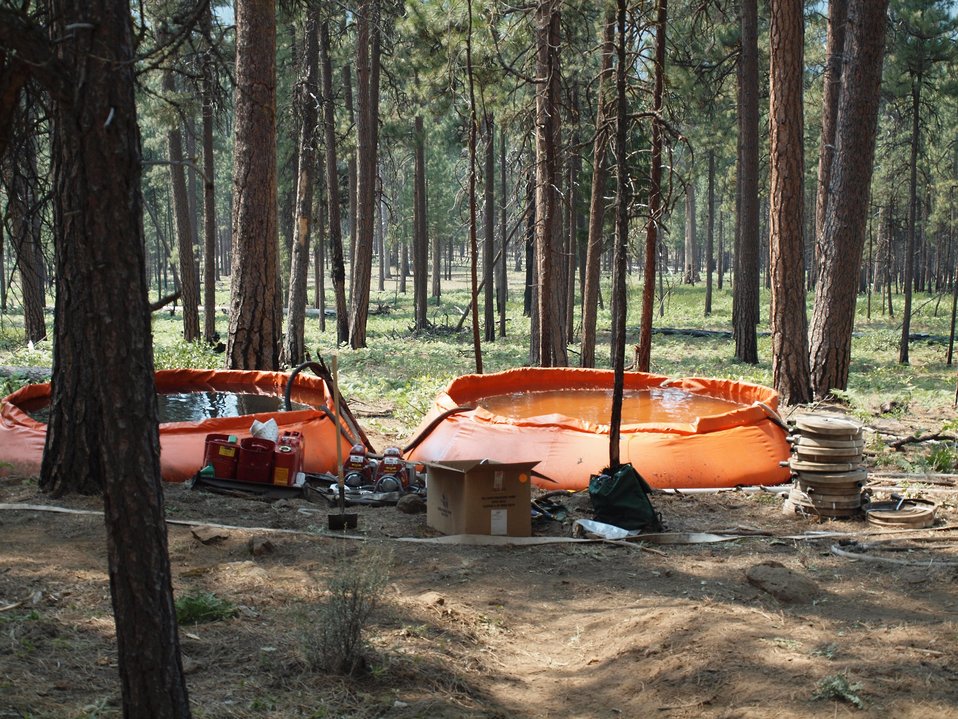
Portable water tanks supply firefighters with water in remote areas of the Green Ridge Fire. The Green Ridge Fire in the Deschutes National Forest near Sisters, OR began on Jul. 31, 2013 by lightning has consumed approximately 1,510 acres and is approximately 95% contained.